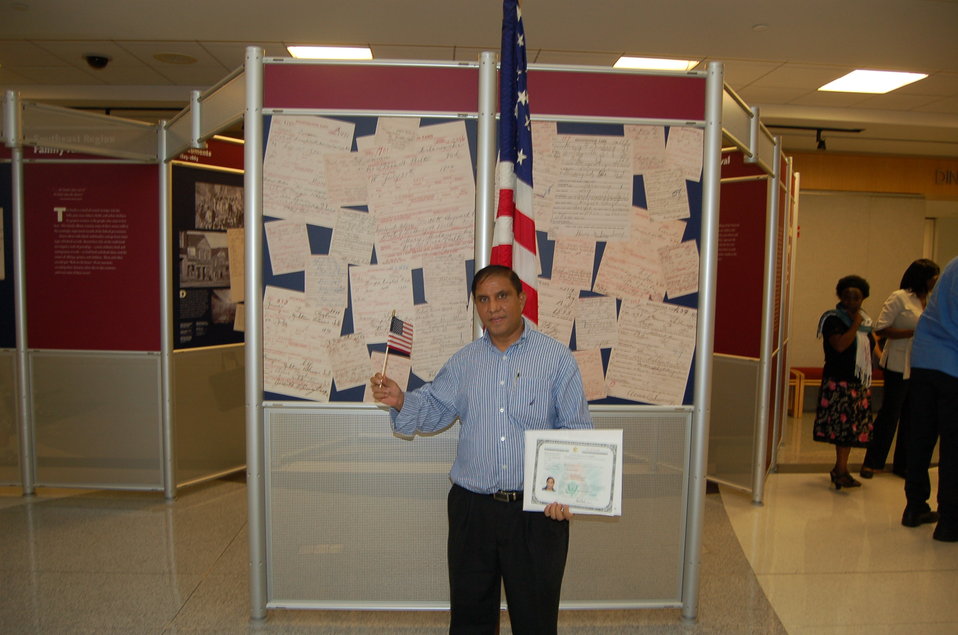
New Citizens